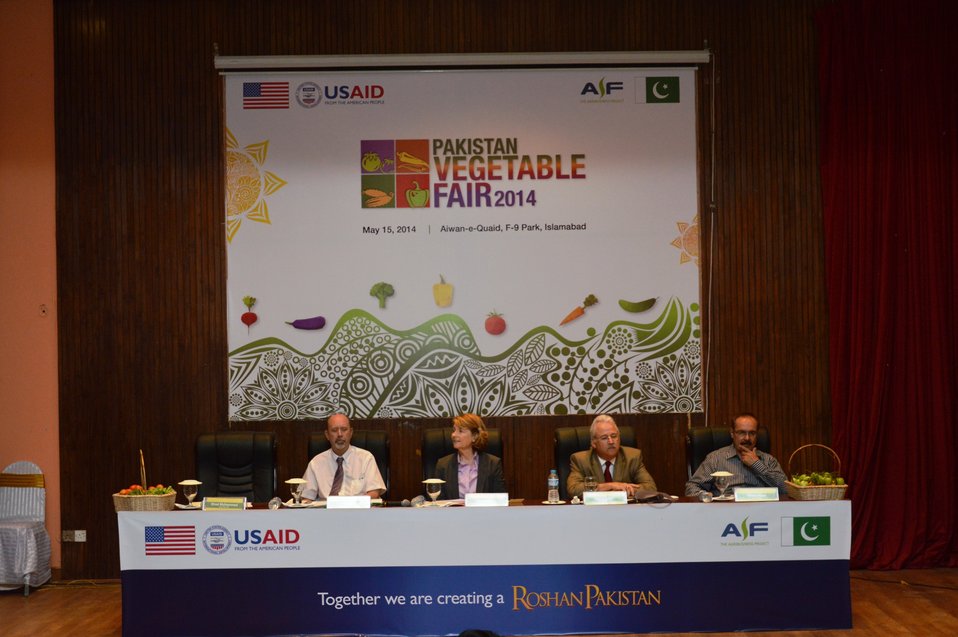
Picture (1) Pakistan vegetable Fair 2014 Islamabad May 15 2014